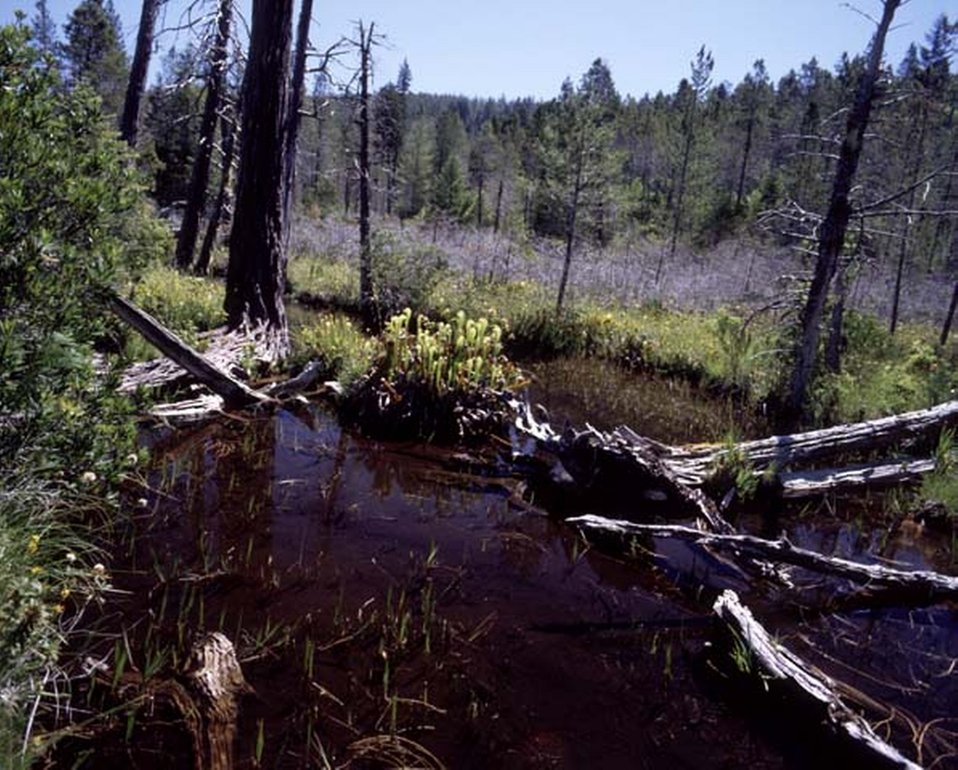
Hunter Creek Bog.